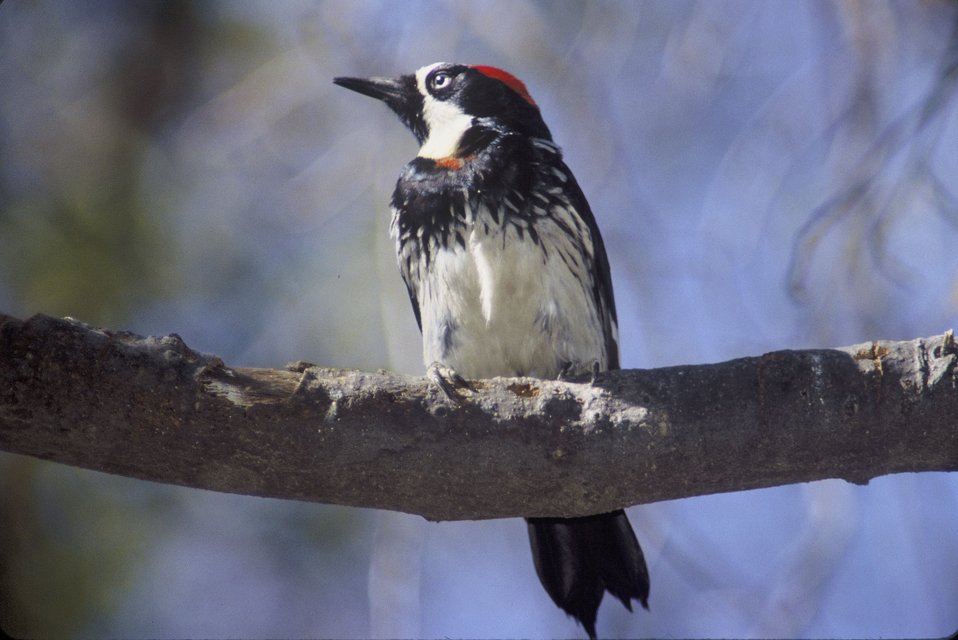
Acorn woodpecker on a tree branch

Male acorn woodpecker on a tree branch.